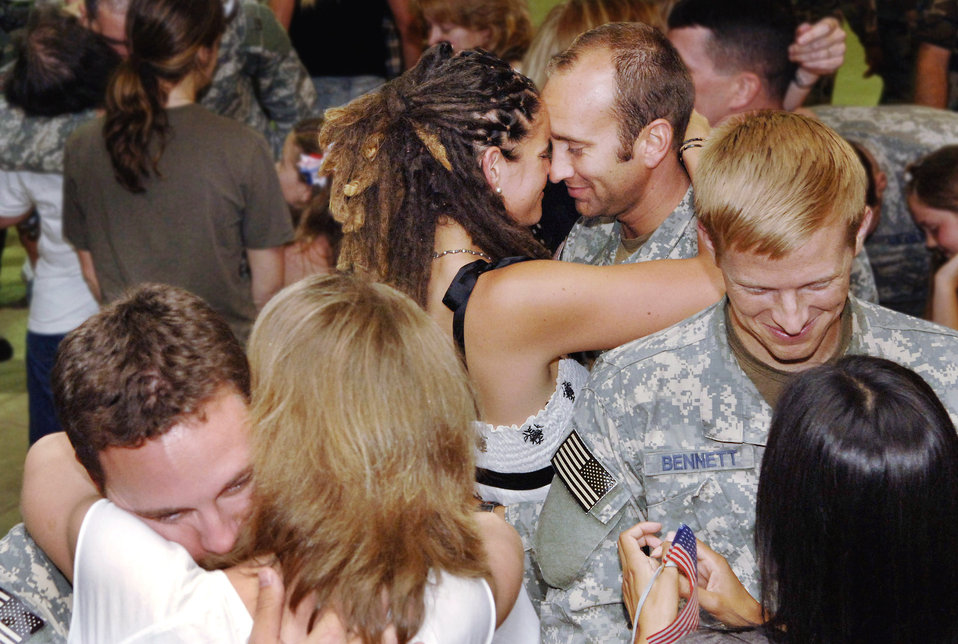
Airmen deployed with Army return home

Airmen from the 3rd Air Support Operations Group greet loved ones following their return from a six-month deployment in Iraq June 5 at Fort Hood, Texas. The battlefield Airmen, comprised mainly of tactical air control party and joint terminal attack controllers are stationed along with more than 50,000 Soldiers at Fort Hood.